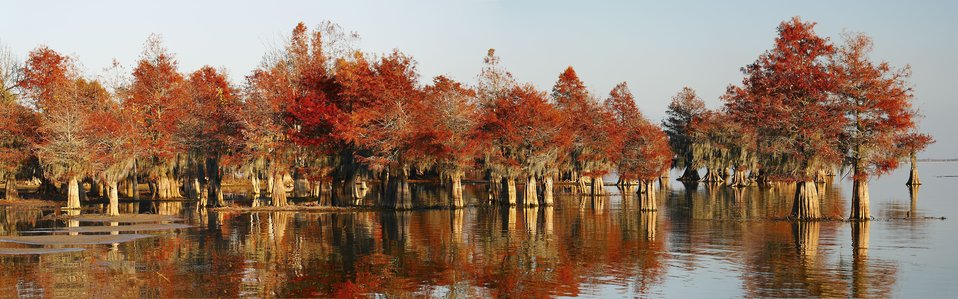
Santee Refuge, SC

Bald cypress forest in autumn, Cuddo Unit of refuge.